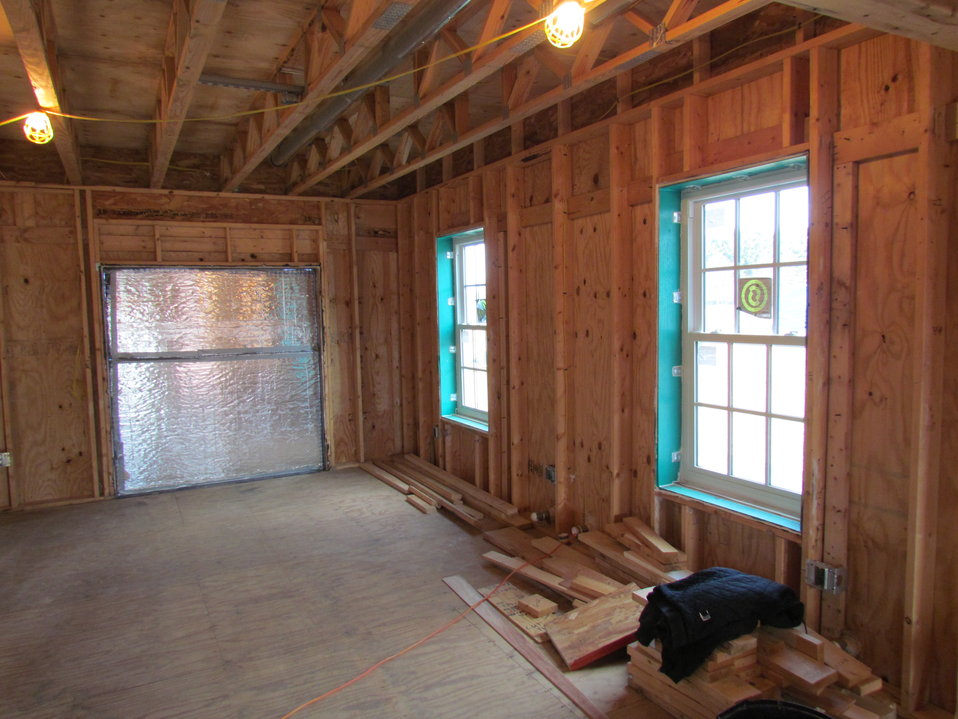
Net-Zero Energy Residential Test Facility – Construction interior photo taken in the north west corner of first floor of facility. Large covered opening is the future location of door leading to rear porch.